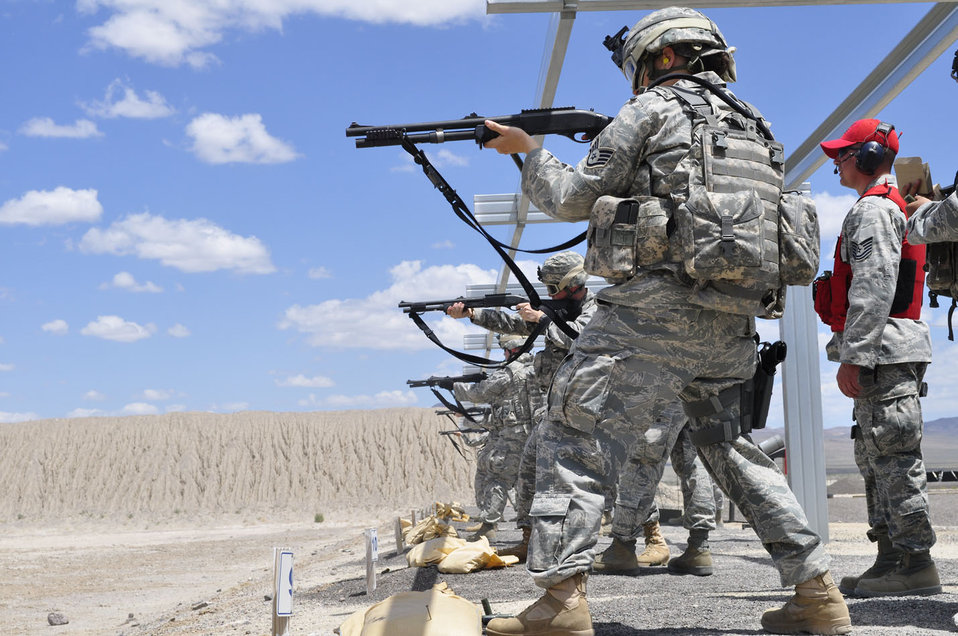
Lock and load!

Members of the Nevada Air National Guard's 152nd Airlift Wing practice using 12-gauge shotguns June 14, 2011, on a firing range at Reno Air National Guard Base, Nev.